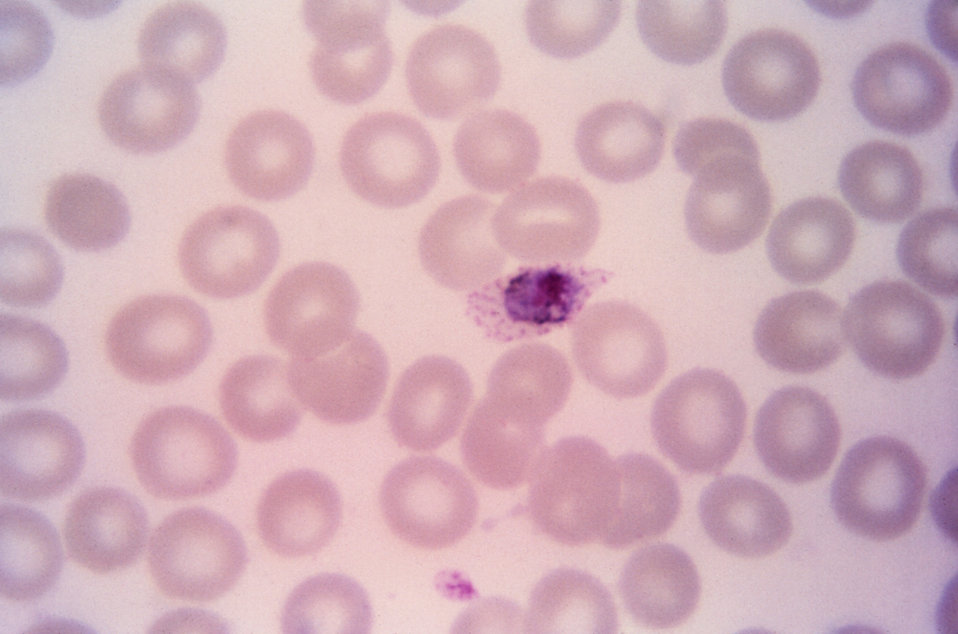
This thin film Giemsa stained micrograph depicts a growing Plasmodium ovale trophozoite.